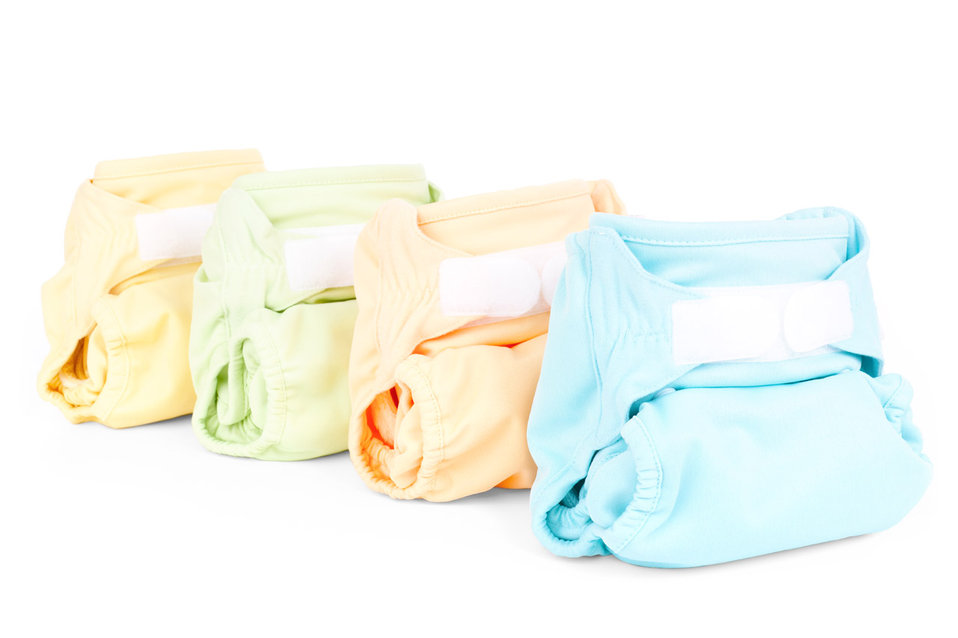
Colorful diapers

Four colorful nappies isolated on white background.